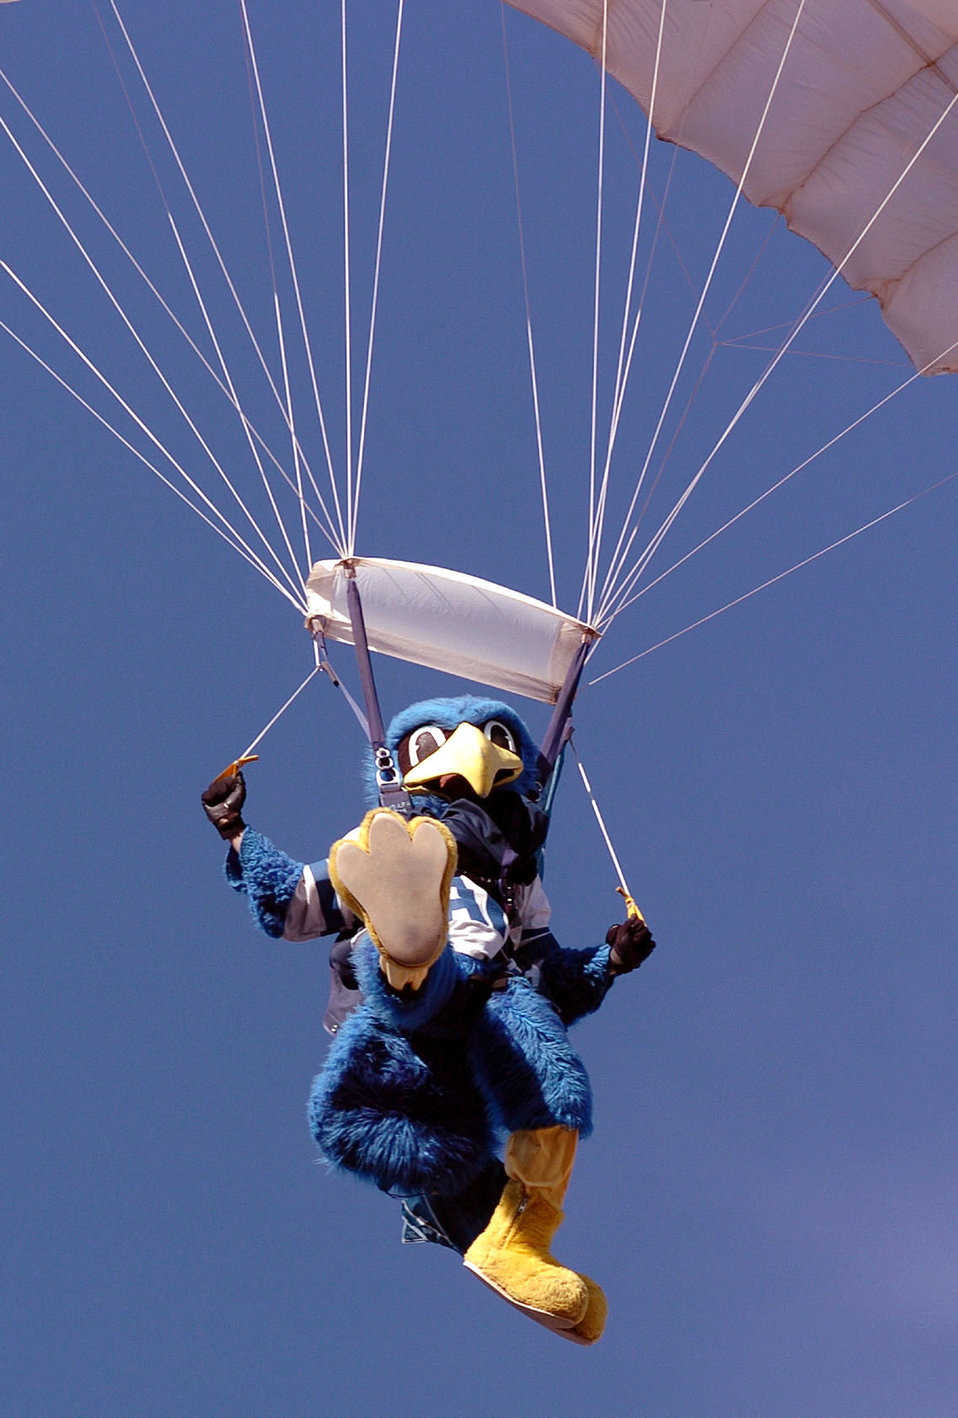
May the best mascot win

U.S. AIR FORCE ACADEMY, Colo. -- The Bird lists skydiving among his many hobbies, claiming the parachute takes all the hard work out of soaring. The U.S. Air Force academy icon is in its third week of competition for the title of best college mascot in America.